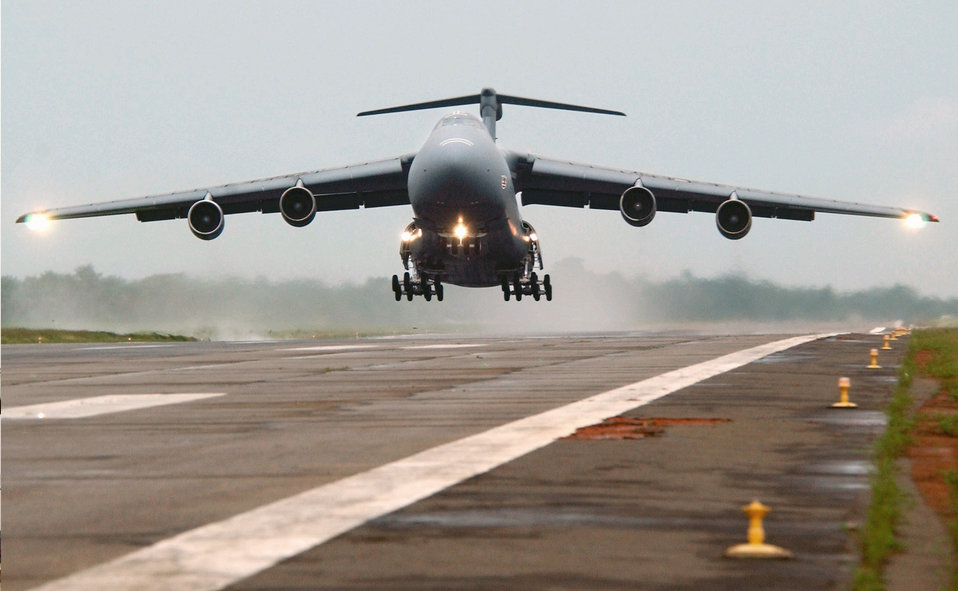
Prepare for takeoff

SOUTHWEST ASIA -- A C-5 Galaxy takes off from an airfield at a forward-deployed location. By using a newly developed grease on the C-5, the Air Force could solve several challenges related to wear, corrosion and rust in the landing gear assembly of the aircraft.